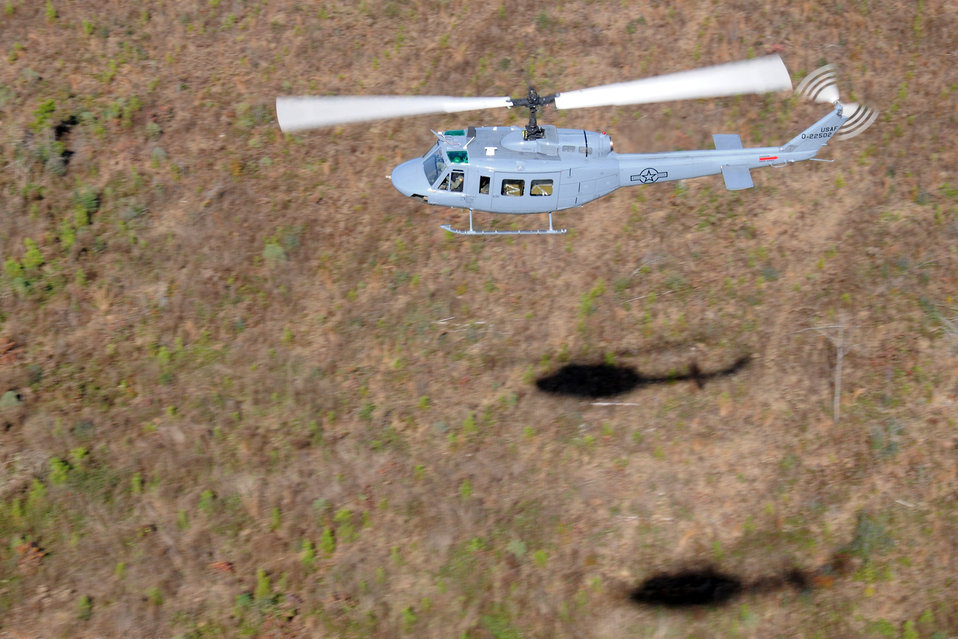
Helicopter training

Students from the 23rd Flying Training Squadron at Fort Rucker, Ala., piloting UH-1H Iroquois helicopters, practice formation-flight patterns. The 23rd FTS is the third and final phase of undergraduate pilot training before the student pilots can obtain their wings. It is the Air Force's primary source of helicopter pilot training for special operations, combat search and rescue, missile support and distinguished visitor airlift missions.